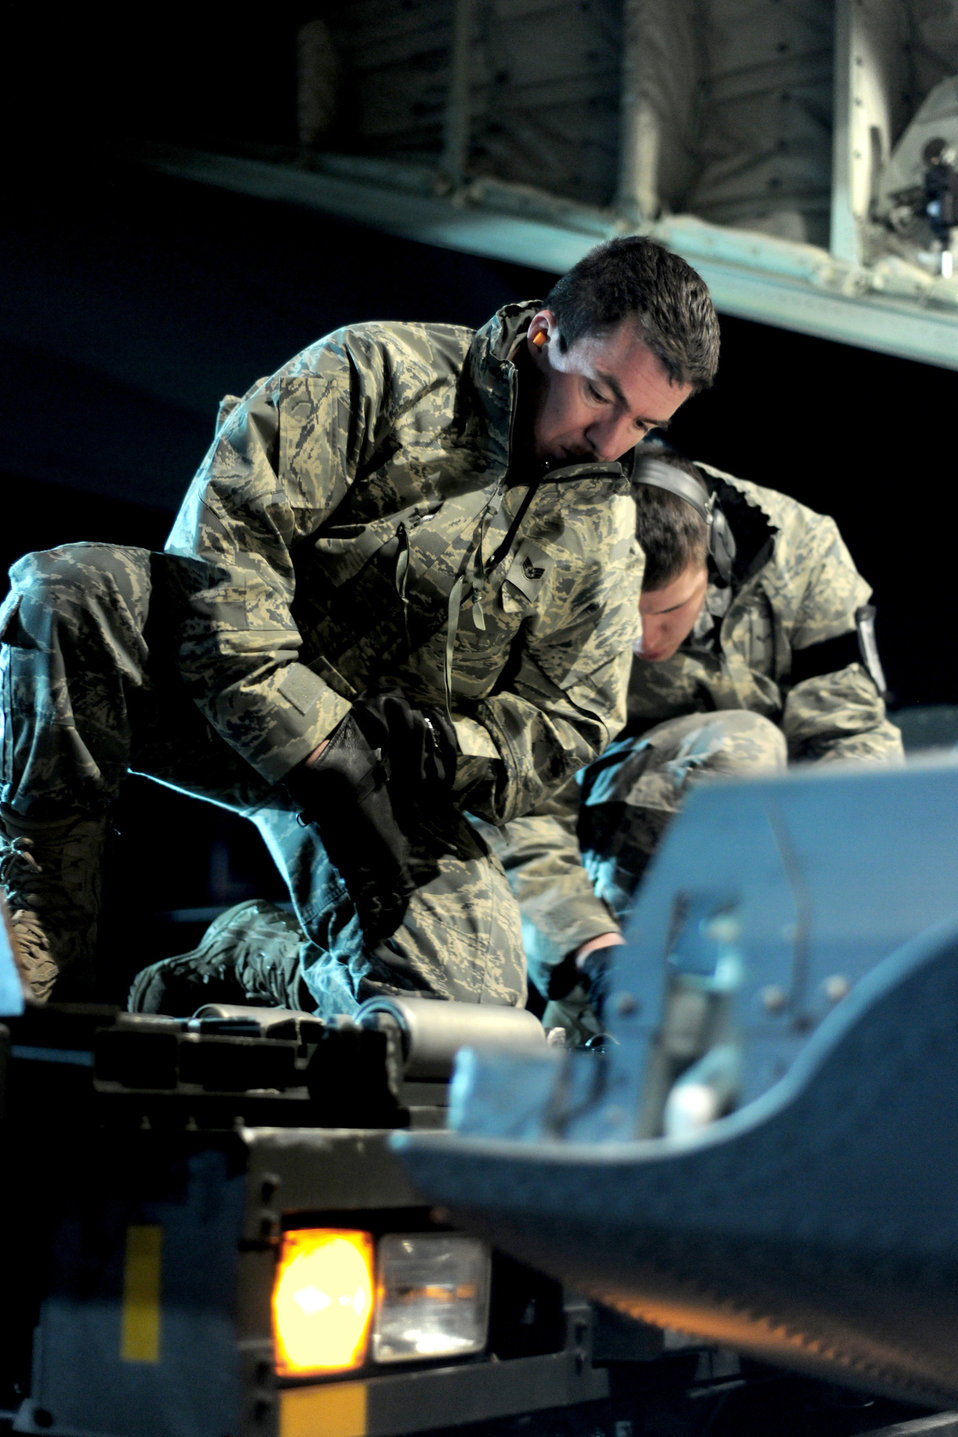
Operation Odyssey Dawn

SPANGDAHLEM AIR BASE, Germany ? Airmen from the 726th Air Mobility Squadron prepare to load cargo onto a C-130J Super Hercules here in support of Operation Odyssey Dawn March 20. Joint Task Force Odyssey Dawn is the U.S. Africa Command task force established to provide operational and tactical command and control of U.S. military forces supporting the international response to the unrest in Libya and enforcement of United Nations Security Council Resolution (UNSCR) 1973. UNSCR 1973 authorizes all necessary measures to protect civilians in Libya under threat of attack by Qadhafi regime forces. JTF Odyssey Dawn is commanded by U.S. Navy Admiral Samuel J. Locklear, III.